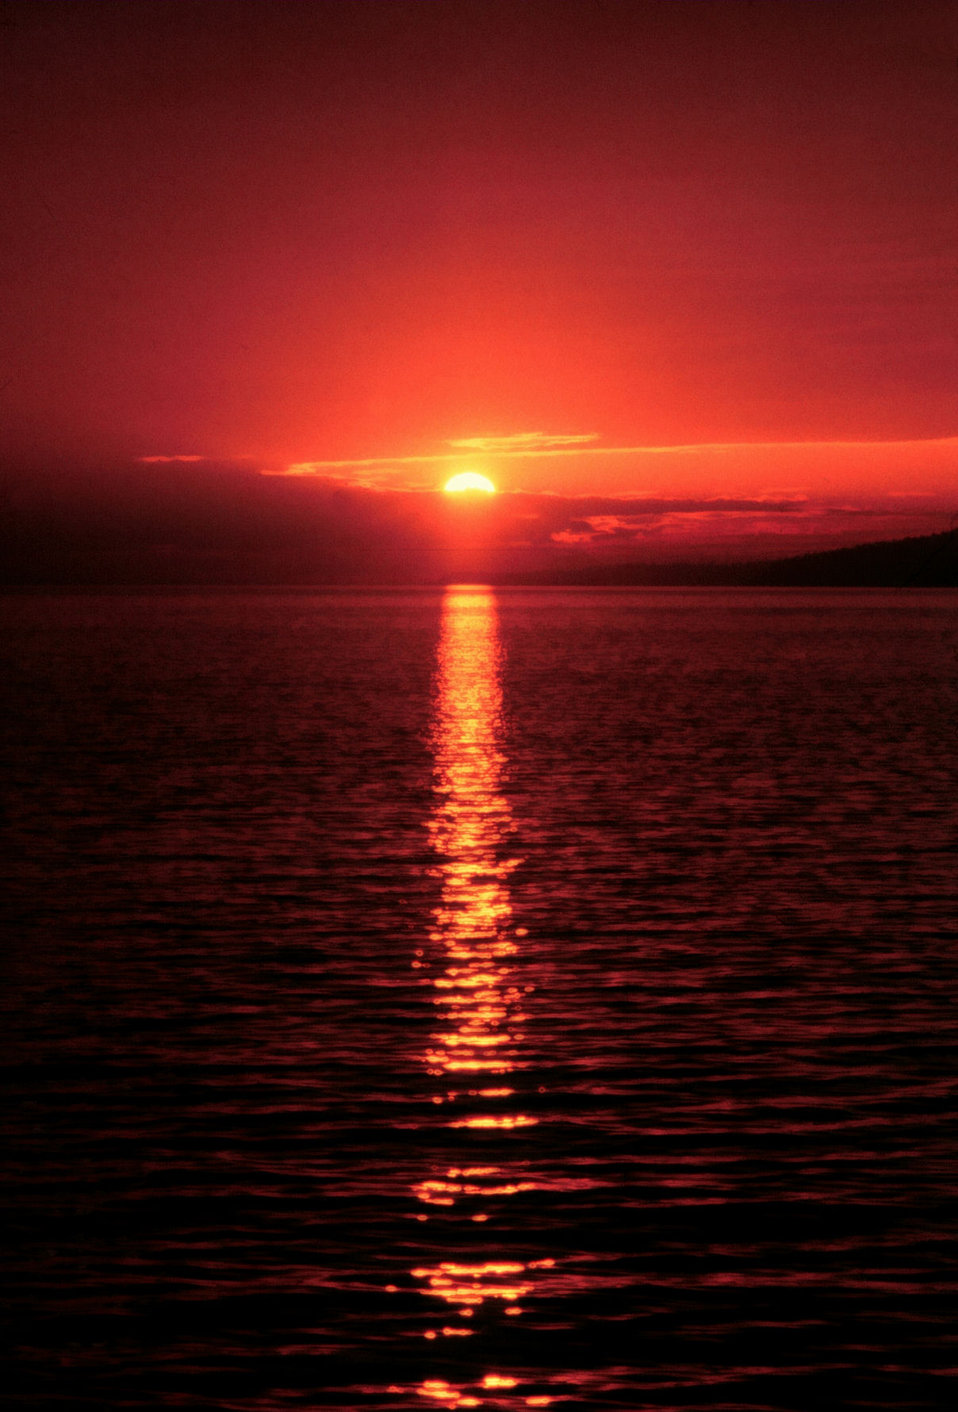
Bronze sunset reflecting in the Straits of Georgia